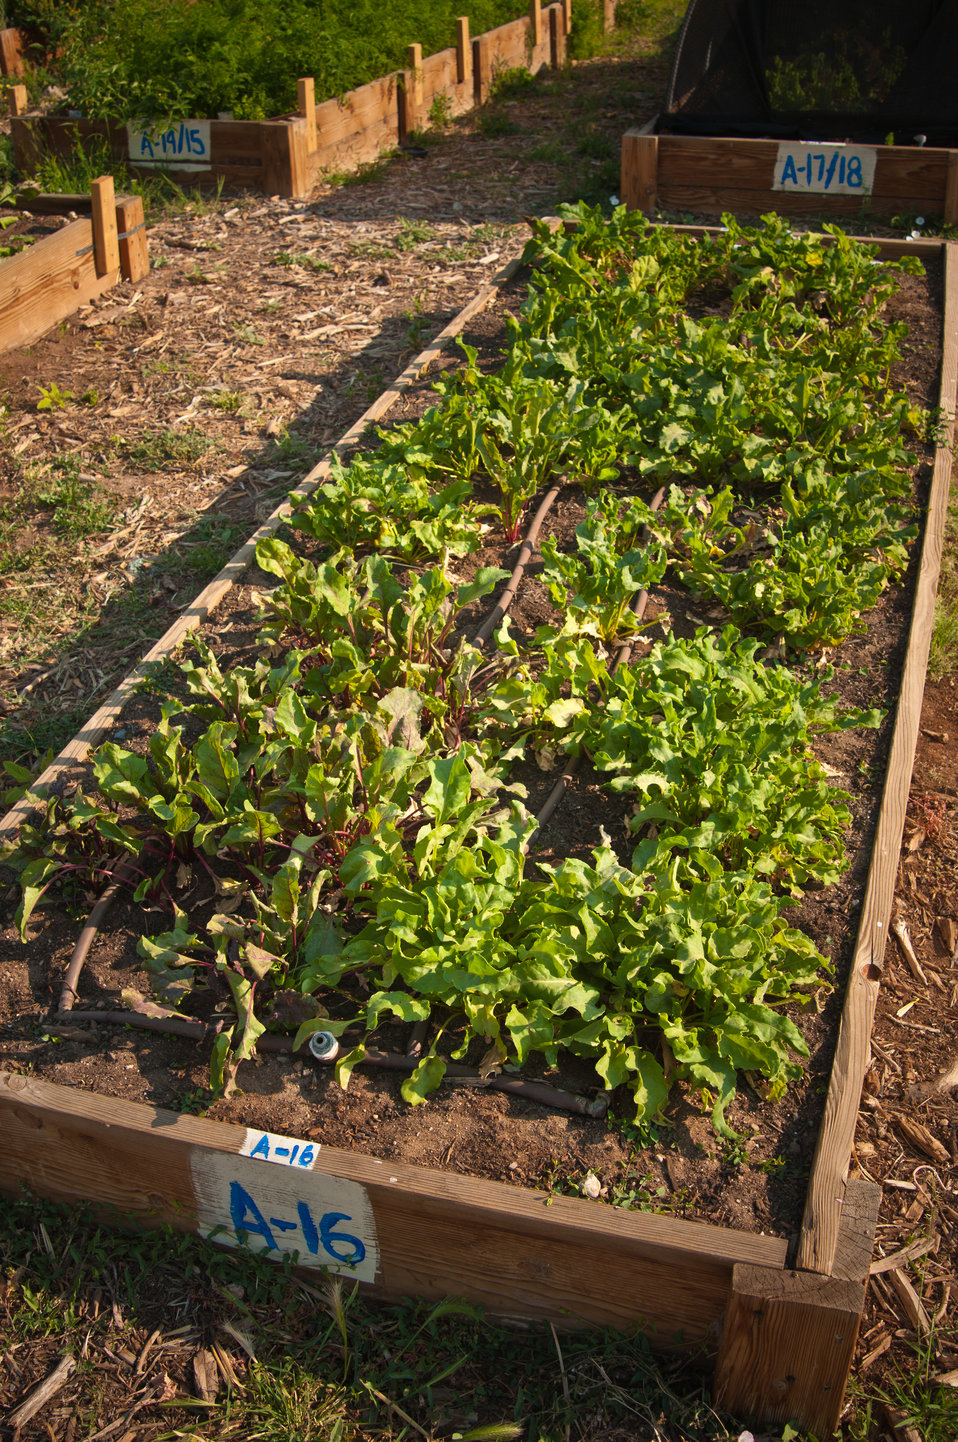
The La Montanita Co-op Veteran Farm Project (VFP) funded through the U.S. Department of Agriculture's (USDA) Agricultural Marketing Service (AMS) Specialty Crop Grant program provides veterans workshops on sustainable farming practices, hands-on gardening and farming experience. This collaboration between La Montanita Co-op, Downtown Action Team, the Veteran’s Administration, the New Mexico Department of Agriculture and Holistic Management International provides the initial training for veterans to start or work at sustainable agriculture businesses. VFP grows produce at their Alvarado Urban Farm in Albuquerque, NM year round. The VFP gardens will supply a stand at the Veteran Affairs (VA) Farmers’ Market once a week over the summer, feed project participants and fill Community Supported Agriculture (CSA) boxes for low-income families in Albuquerque, New Mexico.